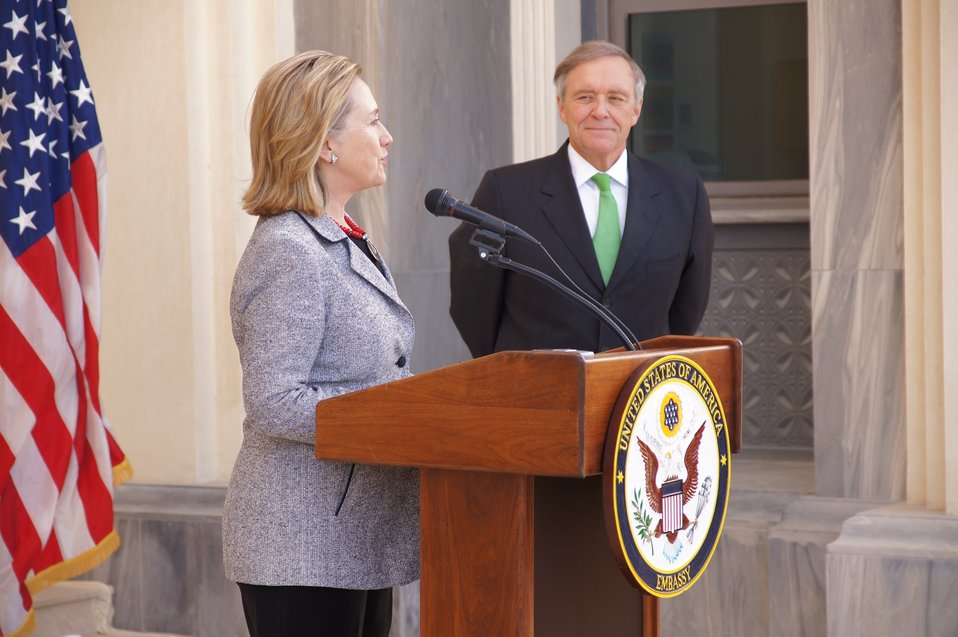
Secretary Clinton, With Ambassador LeBaron, Speaks With U.S. Embassy Doha Staff and Family

U.S. Secretary of State Hillary Rodham Clinton, with U.S. Ambassador to Qatar Joseph Evan LeBaron, speaks with U.S. Embassy Doha staff and family in Doha, Qatar, on January 13, 2010.